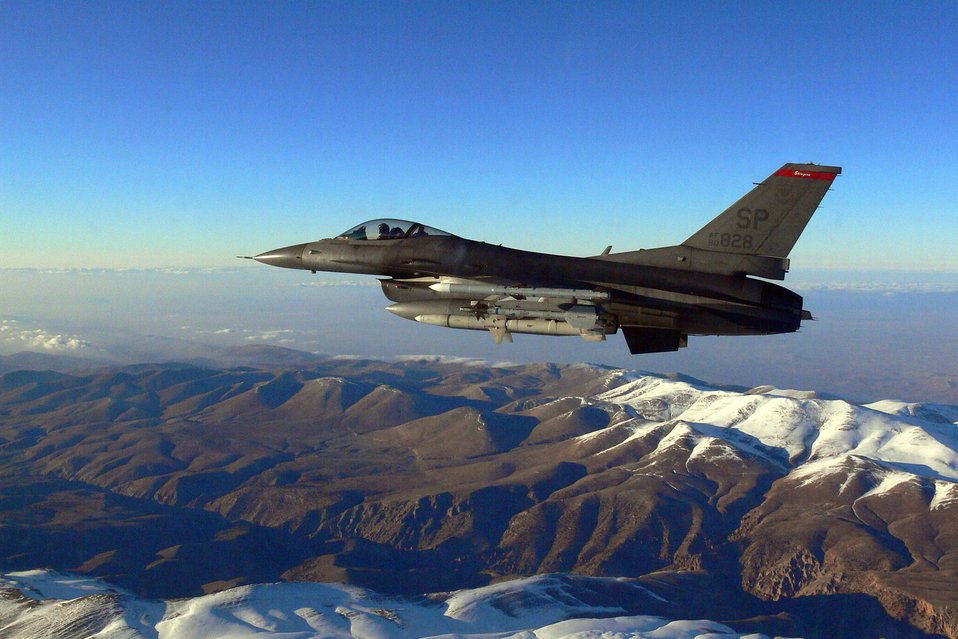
U.S., Turkish forces team up in Anatolian Eagle

An F-16 Fighting Falcon flies over central Turkey during Exercise Anatolian Eagle, conducted at Konya Air Base. The two-week exercise ended Nov. 17, and gave Turkish and American forces the opportunity to work side-by-side during the joint training.